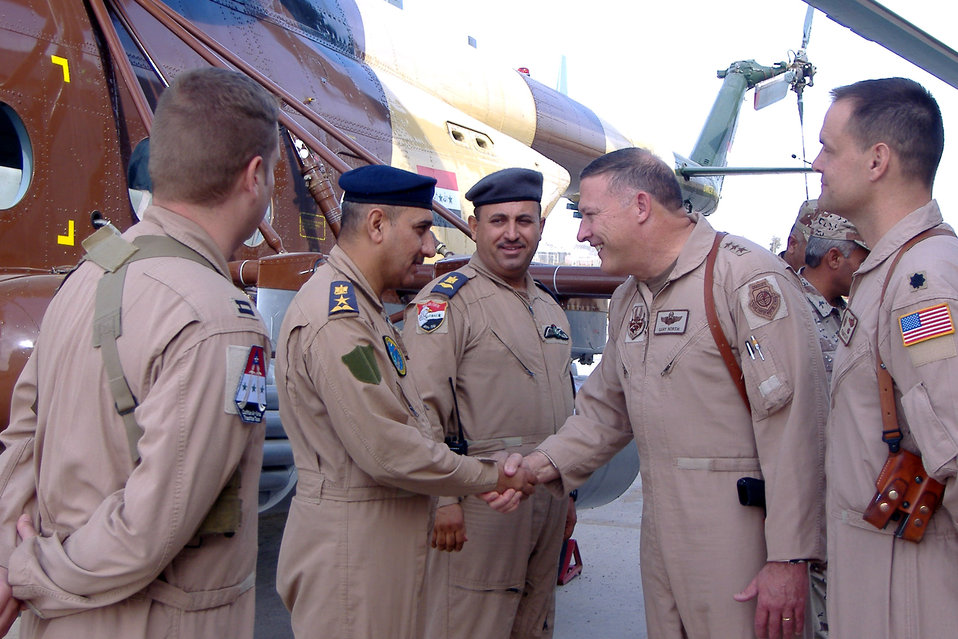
Airmen help establish Iraqi air force

Lt. Gen. Gary L. North greets Iraqi pilot trainees at Camp Taji, Iraq. General North is the U.S. Central Command Air Forces and Combined Forces Air Component commander. Camp Taji Airmen are helping rebuild the Iraqi air force.